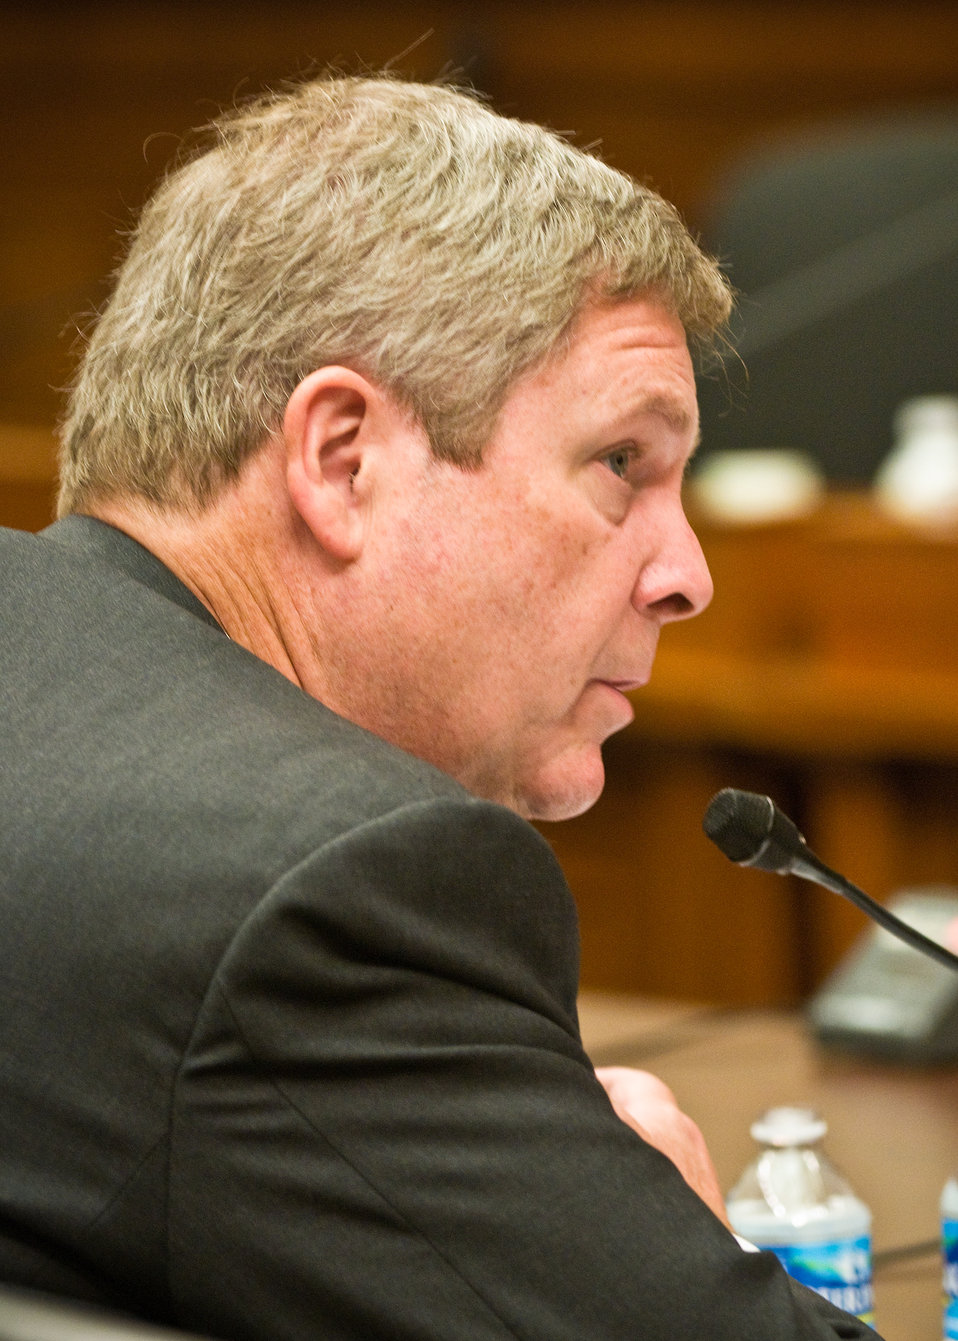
Agriculture Secretary Tom Vilsack attended a hearing of the House Committee on Education and Labor on “H.R.5504, Improving Nutrition for America’s Children Act,” in the Rayburn House Office Building in Washington, D.C., Thursday, July 1, 2010. The hearing discussion involved the need to improve school lunches. USDA Photo 10di1427-31.